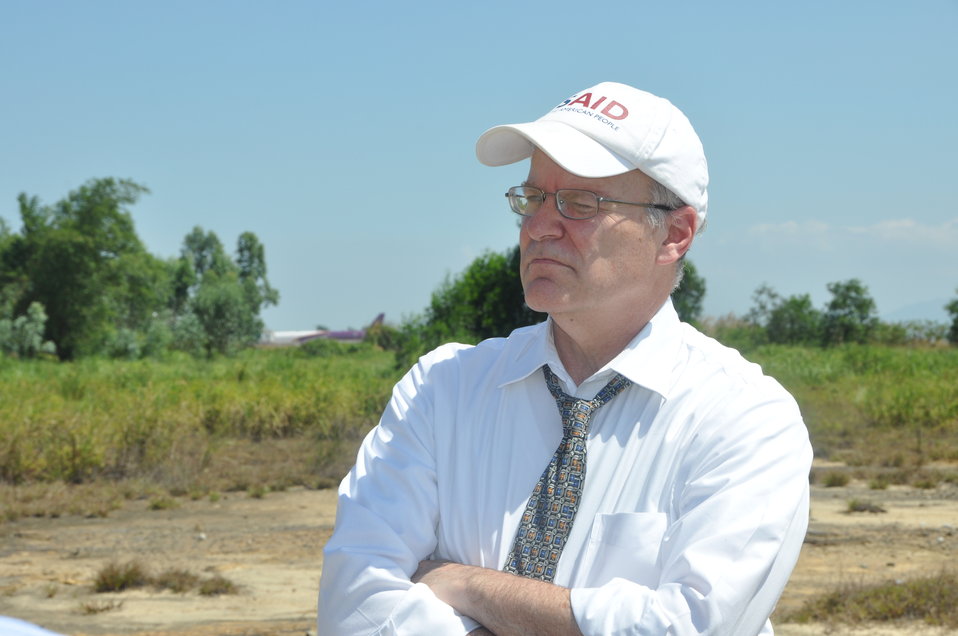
USAID Deputy Administrator Donald Steinberg and delegation visit Danang Airport

USAID Deputy Administrator Donald Steinberg Visits Vietnam